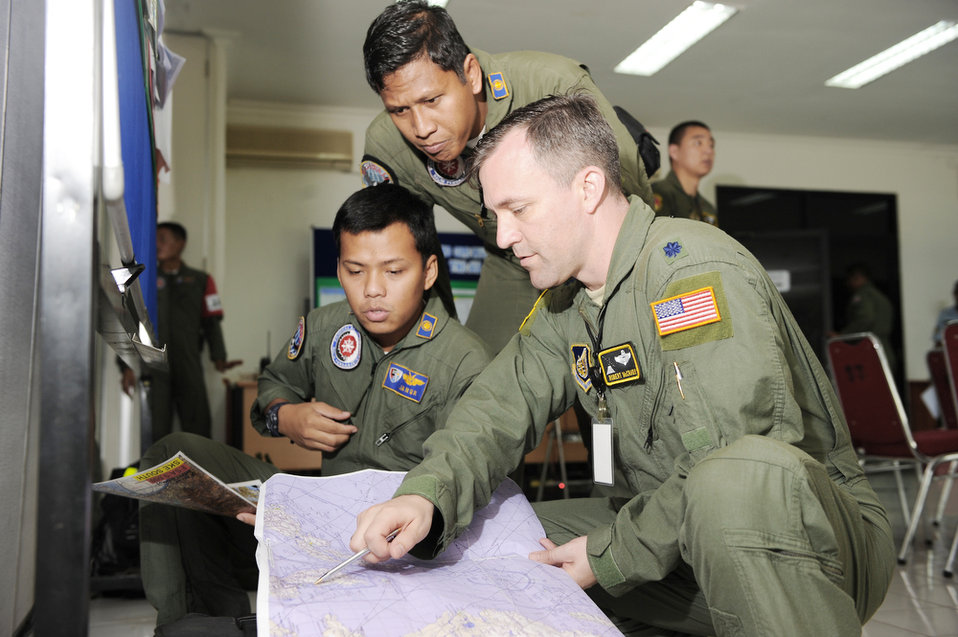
Cope West 2010

Lt. Col. Robert McCrady reviews a flight plan with Indonesian air force pilots after the completion of Exercise Cope West 10 April 23, 2010, at Halim Air Base, Indonesia. Cope West is a Pacific Air Forces-sponsored bilateral tactical airlift exercise involving the U.S. and Indonesian air forces.